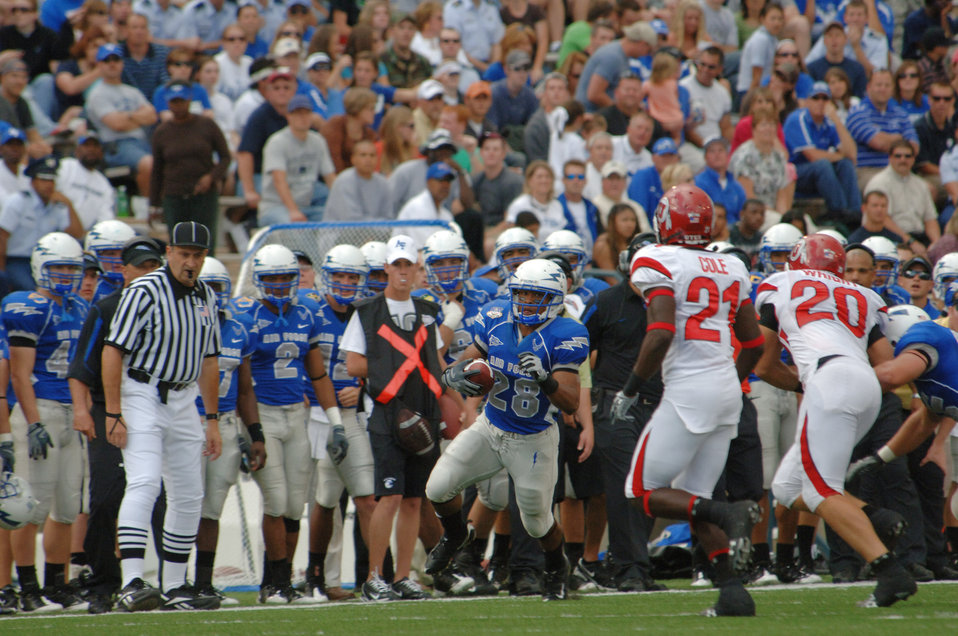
Football: Utah downs Air Force 30-23

U.S. Air Force Academy tailback Savier Stephens rounds the corner and heads down the sidelines while Utah defenders work the angles to limit this play to an eight-yard gain Sept. 20 at the Academy in Colorado. Stephens rushed 13 times for 33 yards.